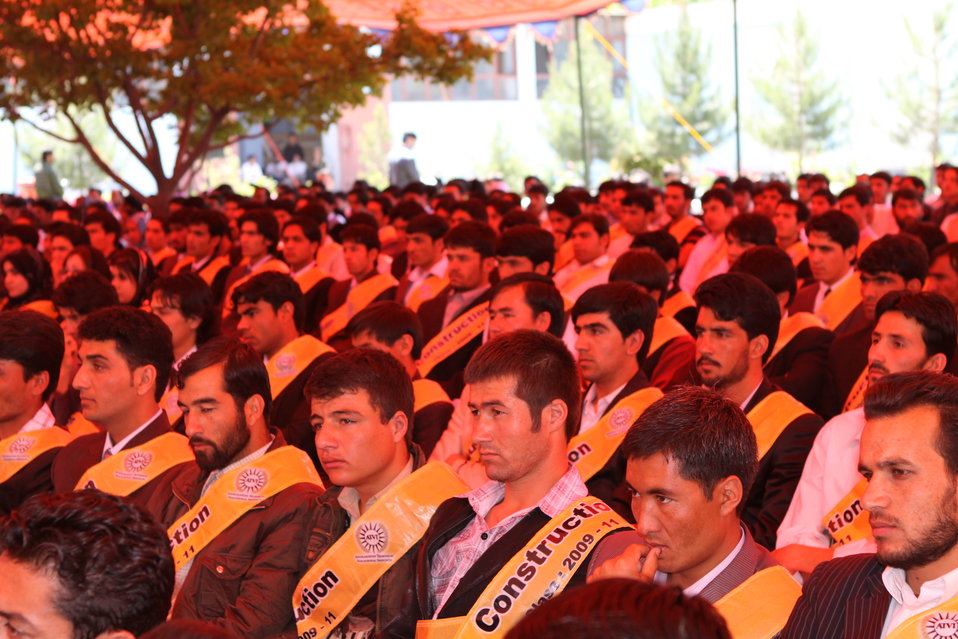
100522 ATVI Graduation 042